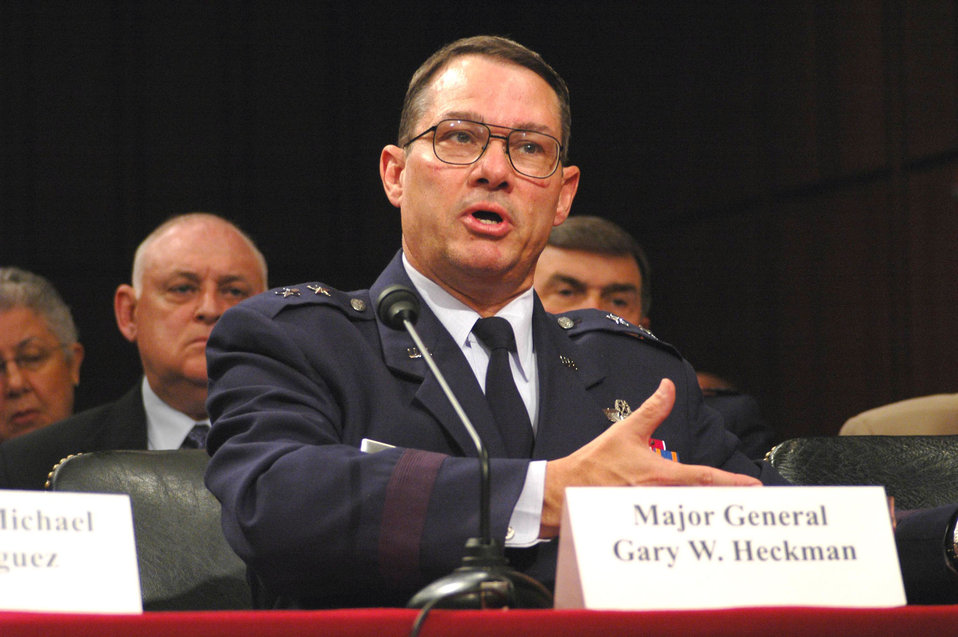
BRAC focus on right-sizing total force

WASHINGTON -- Maj. Gen. Gary W. Heckman testifies about the Air Force's recommendations before the BRAC commission Aug. 11. General Heckman is the co-chairman of the base closure executive group and the assistant deputy chief of Air for Force Plans and Programs.